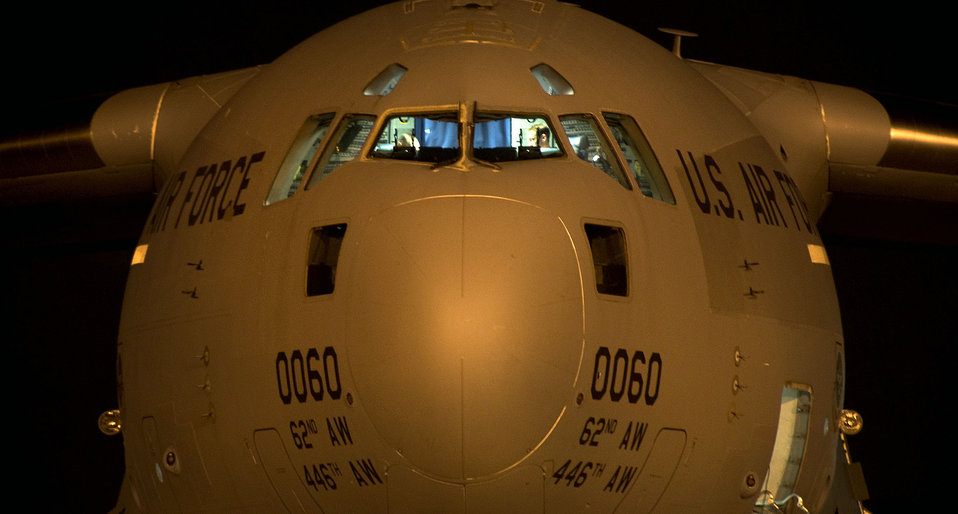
Charleston aerial porters load food, water for Haiti

A C-17 Globemaster III from McChord Air Force Base, Wash., awaits engine startup Jan. 18, 2010, on the flightline at Charleston AFB, S,C. Charleston AFB has become a major distribution hub for food and water being airlifted to Haiti.